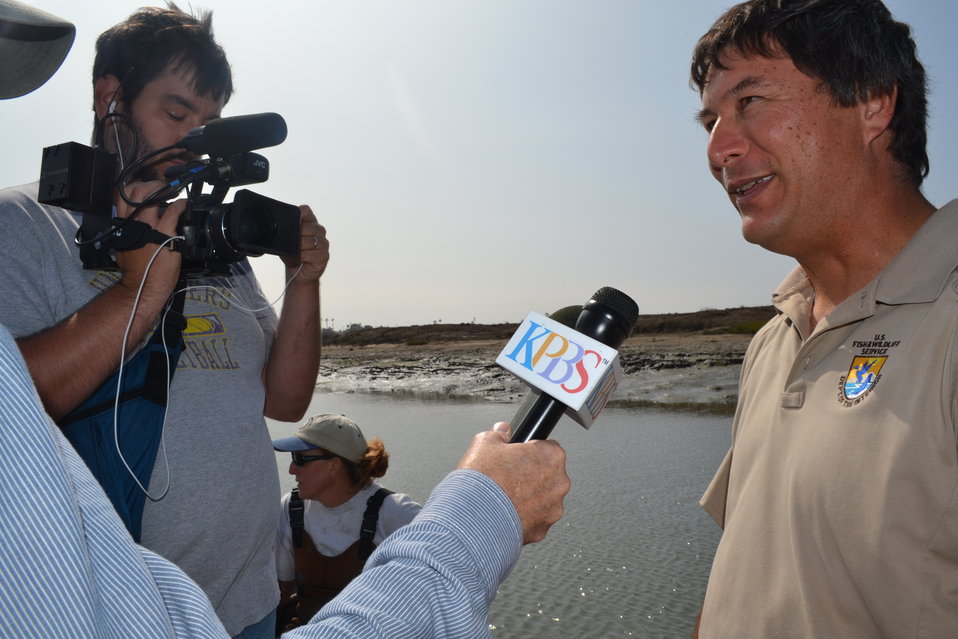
Project Leader of San Diego NWR Complex gets interviewed by KPBS

On October 21, 2011, the local San Diego NPR station, KPBS, did an interview and tour on the finished South San Diego Bay Coastal Restoration & Enhancement Project. Here, Project Leader Andy Yuen describes the process of restoration with KPBS environmental reporter, Ed Joyce, while riding on a boat through the new channels. (Lisa Cox/USFWS)
www.fws.gov/sandiegorefuges/Western Salt Ponds Rest...